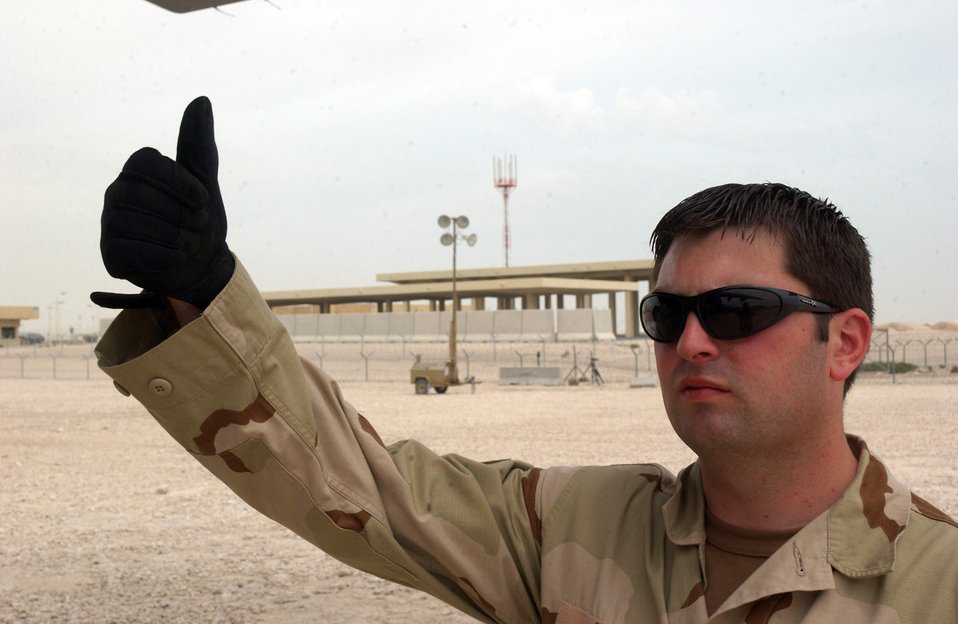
Herc operations

Staff Sgt. Christopher Zink gives a thumbs up to a C-130J Hercules crew at a deployed location in Southwest Asia on Wednesday, April 5, 2006. Sergeant Zink is with the 747th Aircraft Maintenance Unit.